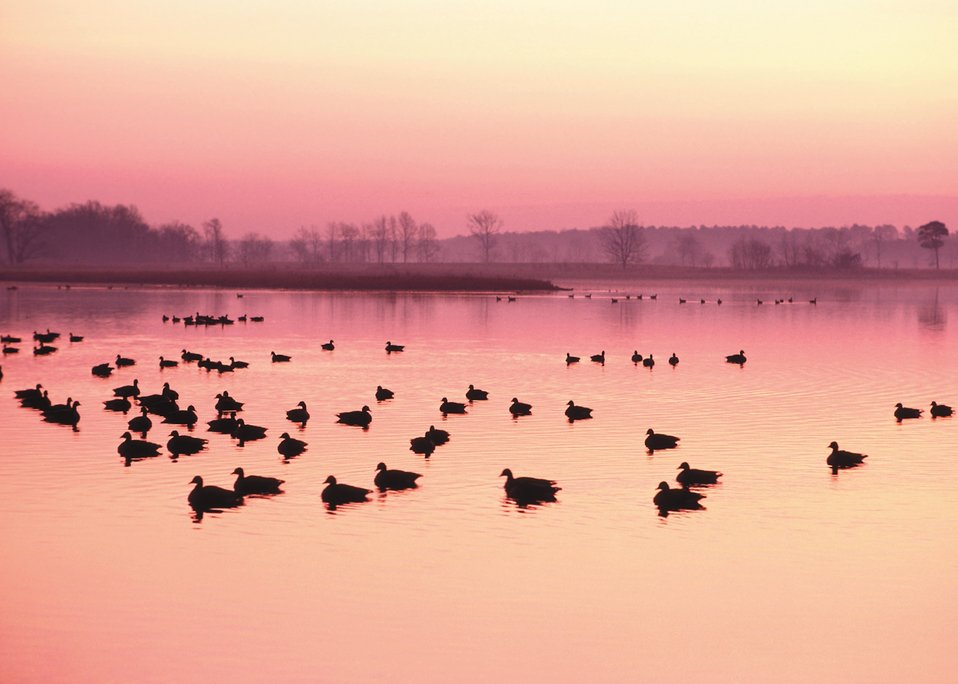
Water quality improvements in the Chesapeake Bay benefit the many species of wildlife that call it home. The U.S. Department of Agriculture’s (USDA) Natural Resources Conservation Service (NRCS) is working with partners to test innovative water quality trading tools that will help improve the water quality of the Chesapeake Bay.